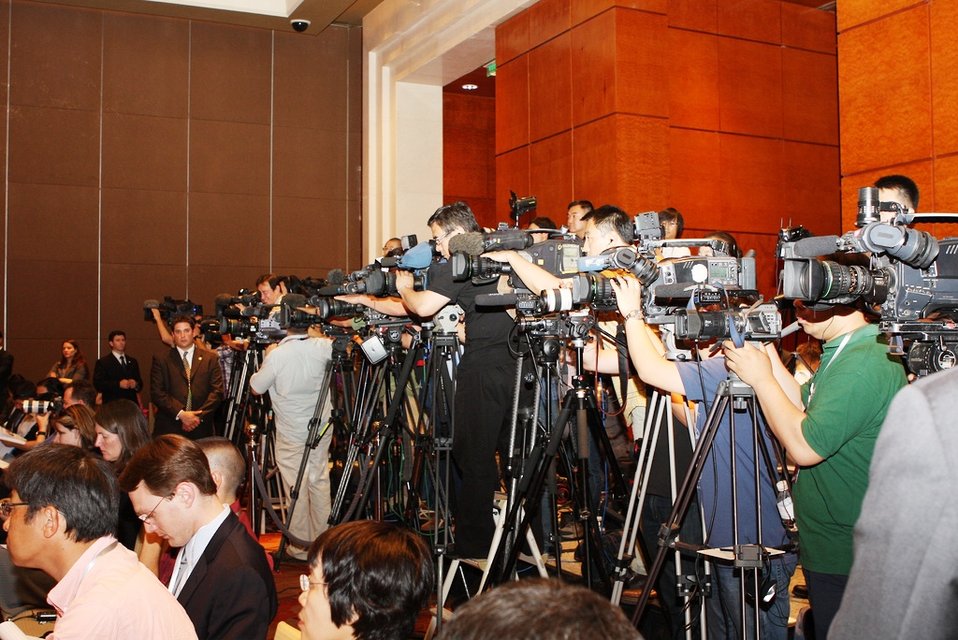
Members of the Press Capture Secretary Clinton and Secretary Geithner's Joint Press Availability

Members of the press capture U.S. Secretary of State Hillary Rodham Clinton and U.S. Secretary of the Treasury Timothy F. Geithner's joint press availability, in Beijing, China, following the conclusion of the U.S.-China Strategic and Economic Dialogue on May 25, 2010.